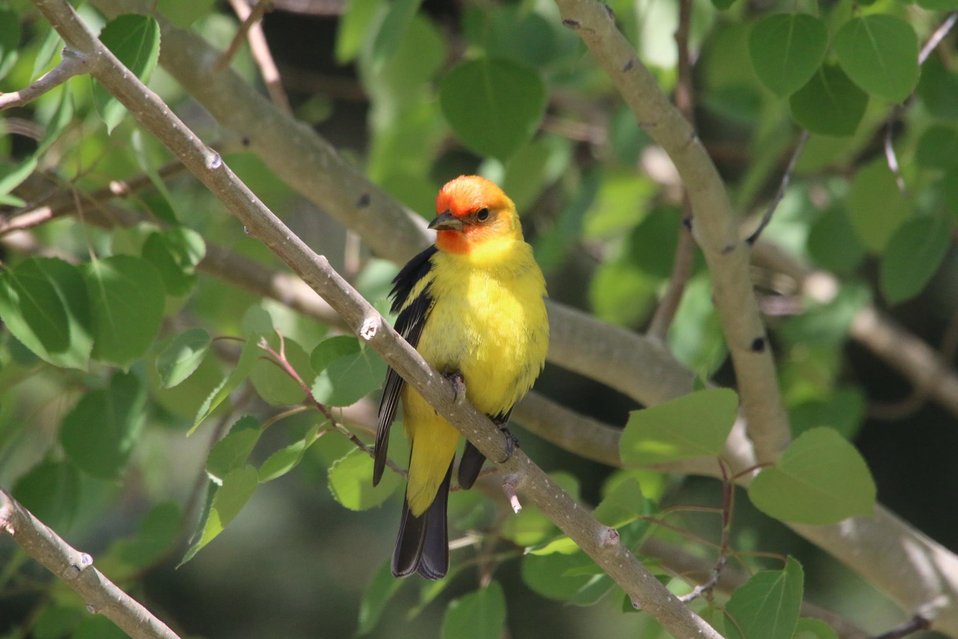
Colors of the Spirit

'Nature always wears the colors of the spirit.' - Ralph Waldo Emerson.

The Cornell Lab of Ornithology describes this bird so well: 'A clear look at a male Western Tanager is like looking at a flame: an orange-red head, brilliant yellow body, and coal-black wings, back and tail.'

Credit: USFWS / Ann Hough, National Elk Refuge volunteer